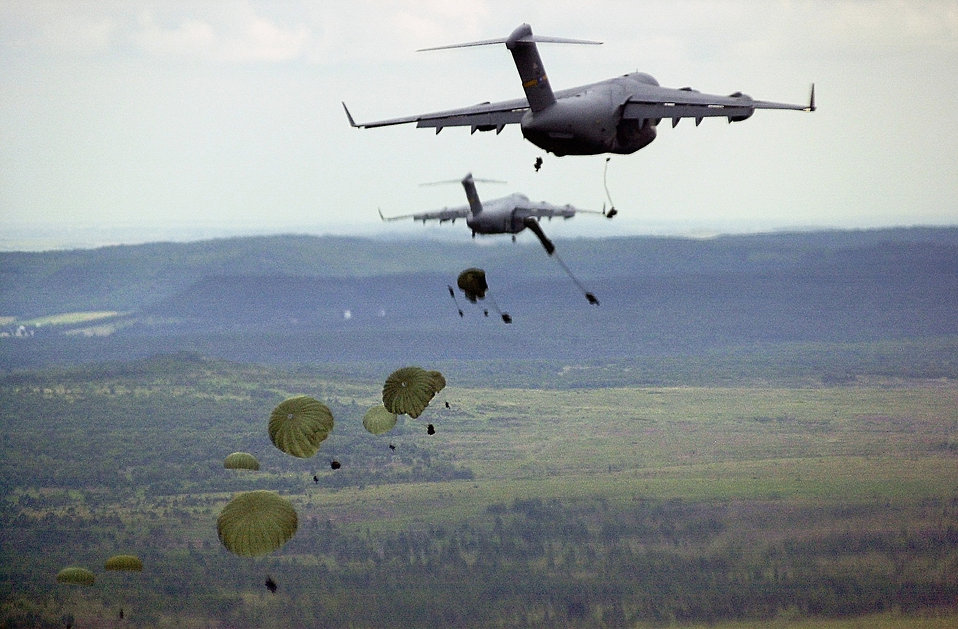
Tactical airlift

FILE PHOTO -- The C-17 Globemaster III is the most flexible cargo aircraft to enter the airlift force. The C-17 is capable of rapid strategic delivery of troops and all types of cargo to main operating bases or directly to forward bases in the deployment area. The aircraft is also capable of performing tactical airlift and airdrop missions when required. The inherent flexibility and performance of the C-17 force improve the ability of the total airlift system to fulfill the worldwide air mobility requirements of the United States.